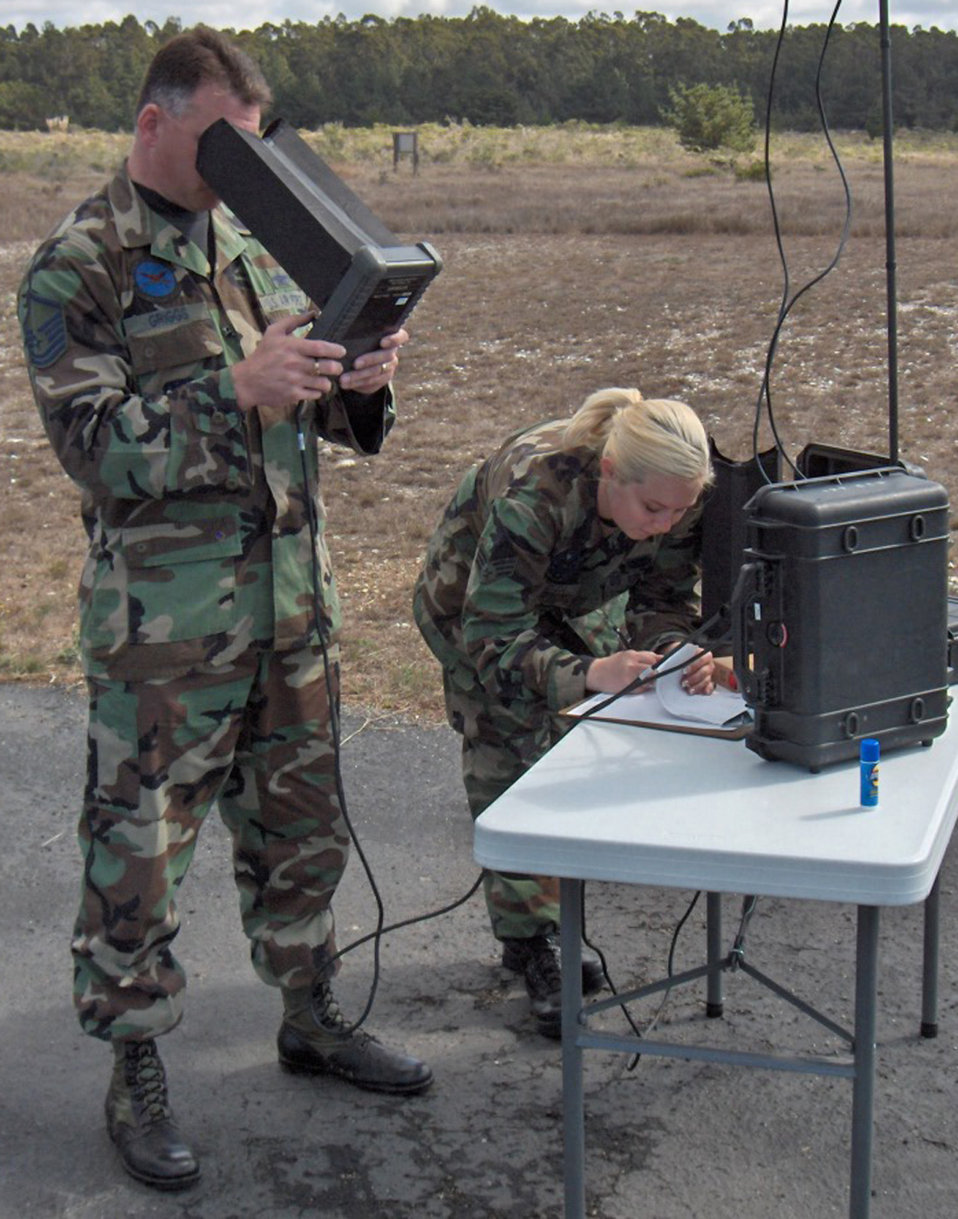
Raven

VANDENBERG AIR FORCE BASE, Calif. (AFPN) -- Master Sgt. Timothy Griggs (left) and Senior Airman Mirandy Mazzuca pilot and conduct light checks on a Raven, one of Vandenberg's UAVs. The Raven provides security, reconnaisance, surveillance capabilities and more. The Airmen are unmanned aerial vehicle pilots in the 30th Security Forces Squadron,